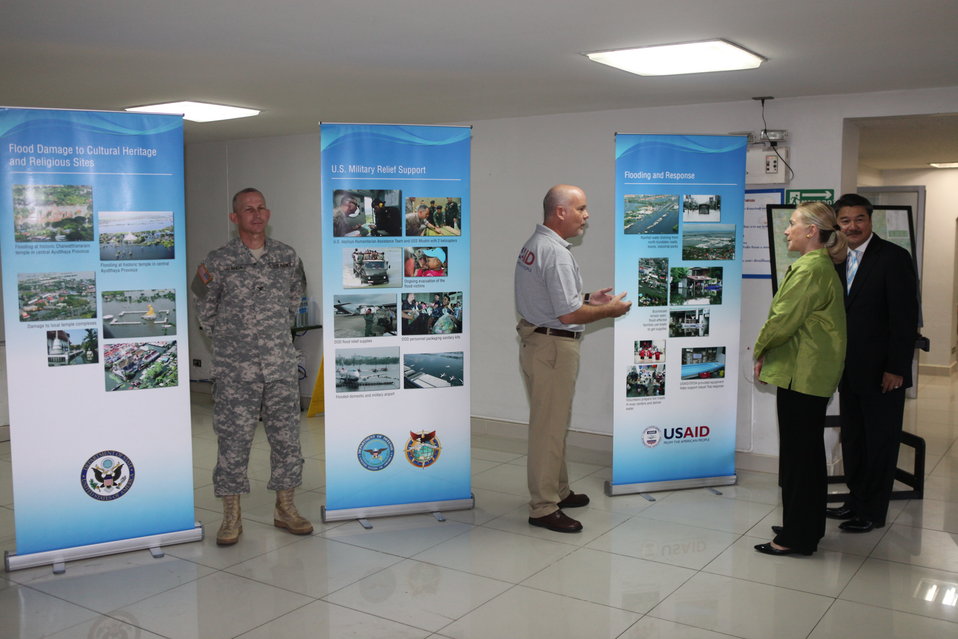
Secretary Clinton Looks at a Presentation of Flood Damage

U.S. Secretary of State Hillary Rodham Clinton looks at a presentation of the flood damage in Thailand and U.S. flood assistance at a temporary evacuation site at the Sports Center Rajamangala Stadium in Bangkok, Thailand, on November 17, 2011.